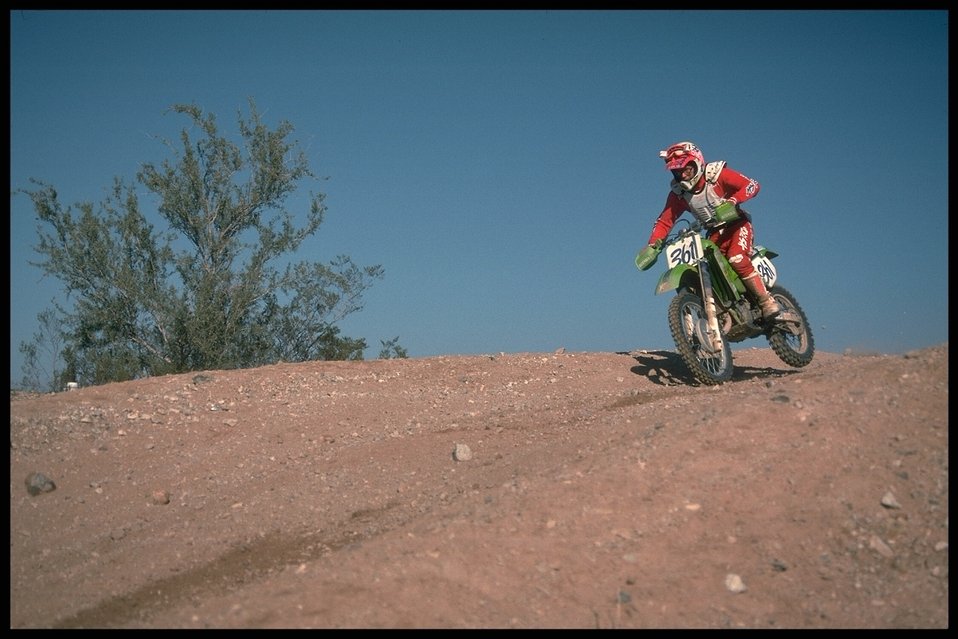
Quench your need for speed by motorbiking in the permitted parts of Arizona's public lands.